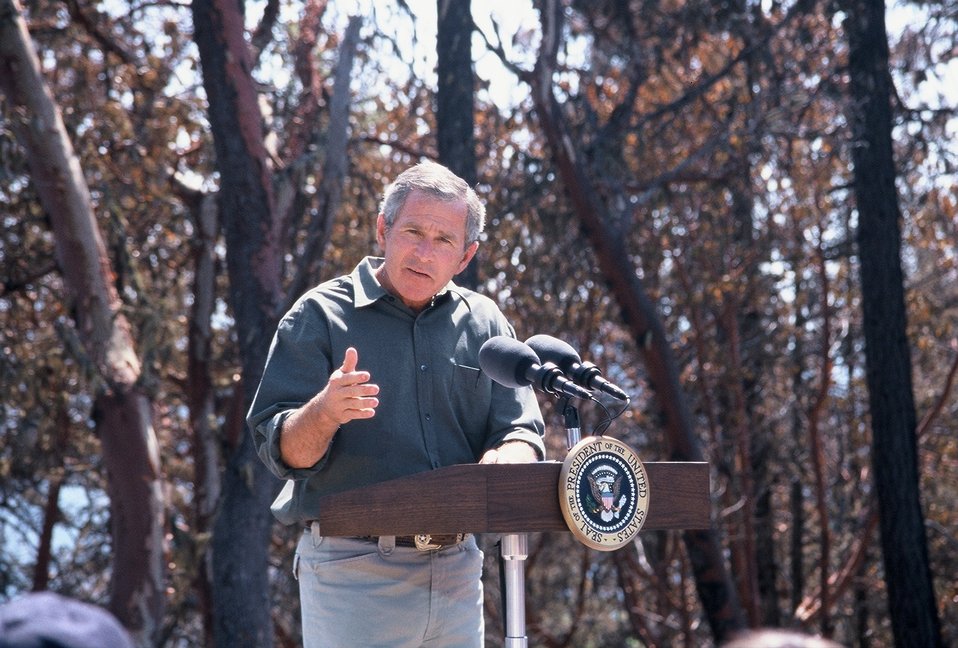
President Bush announces his Healthy Forests Initiative at the site of the Squires Fire, August 22, 2002.